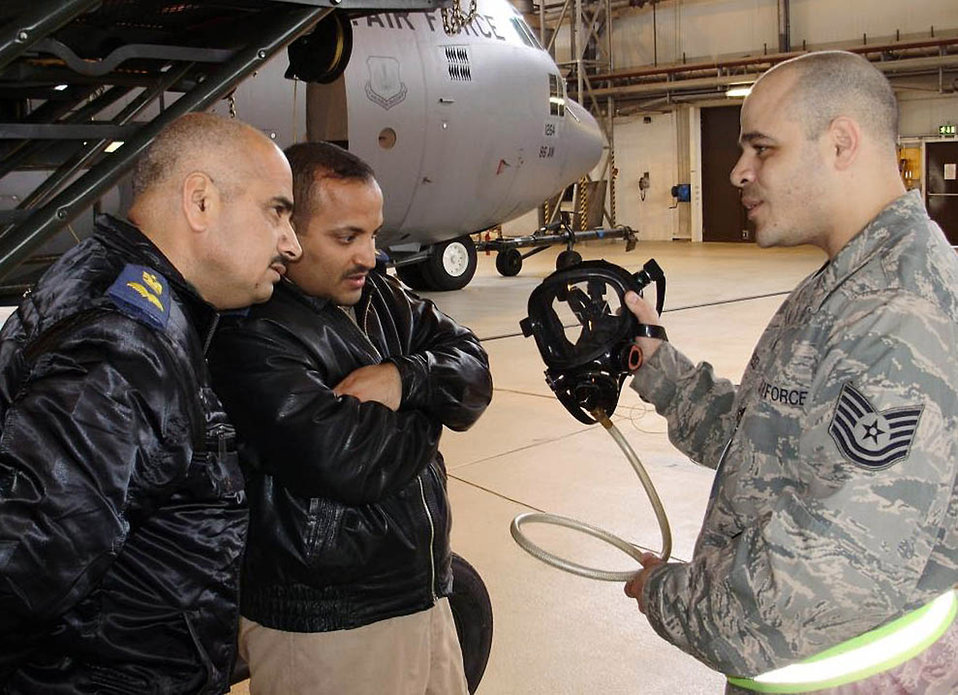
Iraqi surgeons attend annual conference in Germany

Tech. Sgt. Ruben Rodriguez talks about the air mask he uses when going inside the fuel tanks of a C-130 Hercules to the Iraqi air force flight surgeons Major (Dr.) Abdulrazzaq and Lt. (Dr.) Hazem March 13 at Ramstein Air Base, Germany. Sergeant Rodriguez is assigned to the 86th Maintenance Squadron.